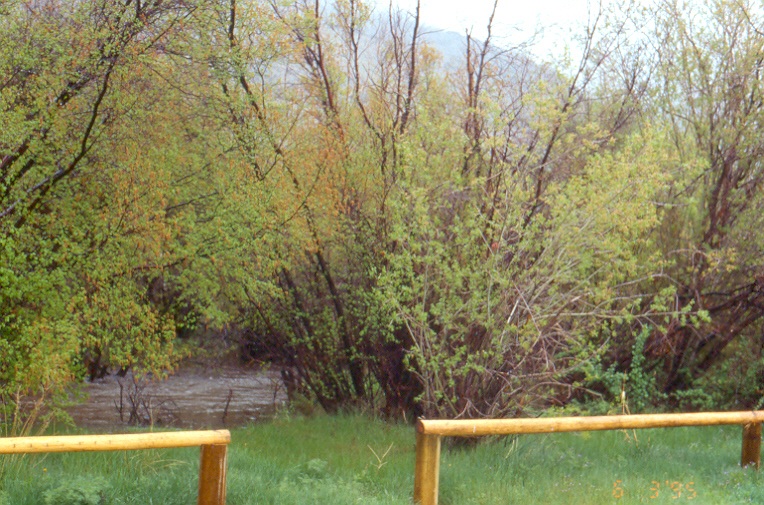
Recreation Site Salmon Field Office UCSC Upper Columbia Salmon Clearwater District